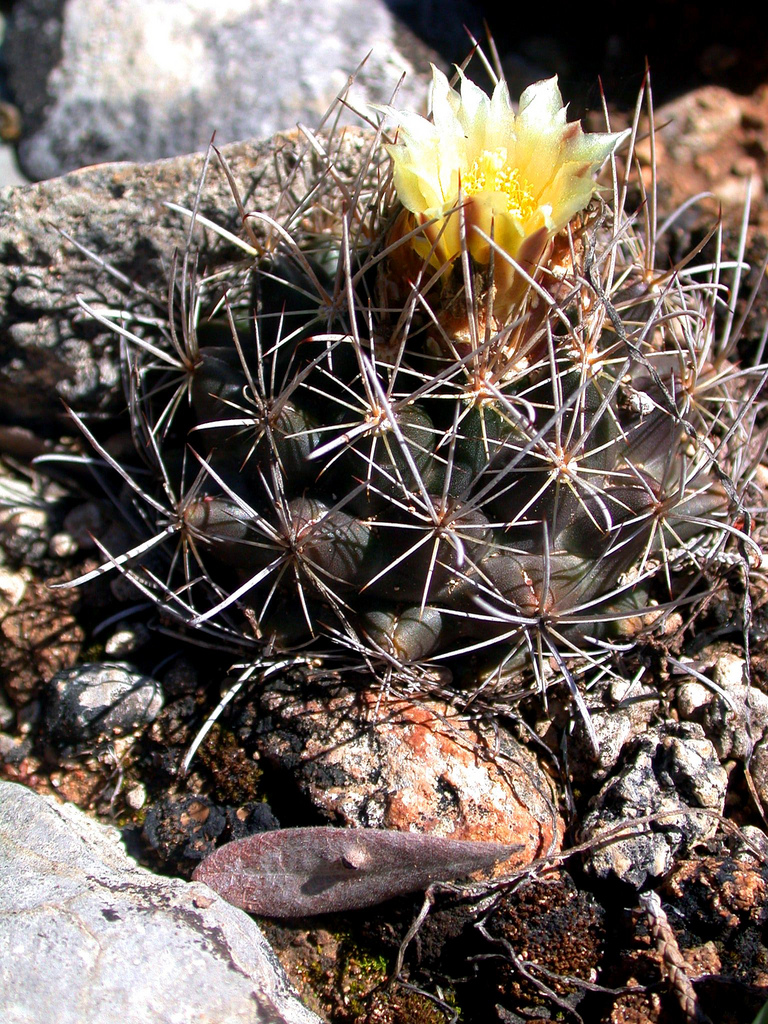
Endangered Tobusch fishhook cactus (Ancistrocactus tobuschii)